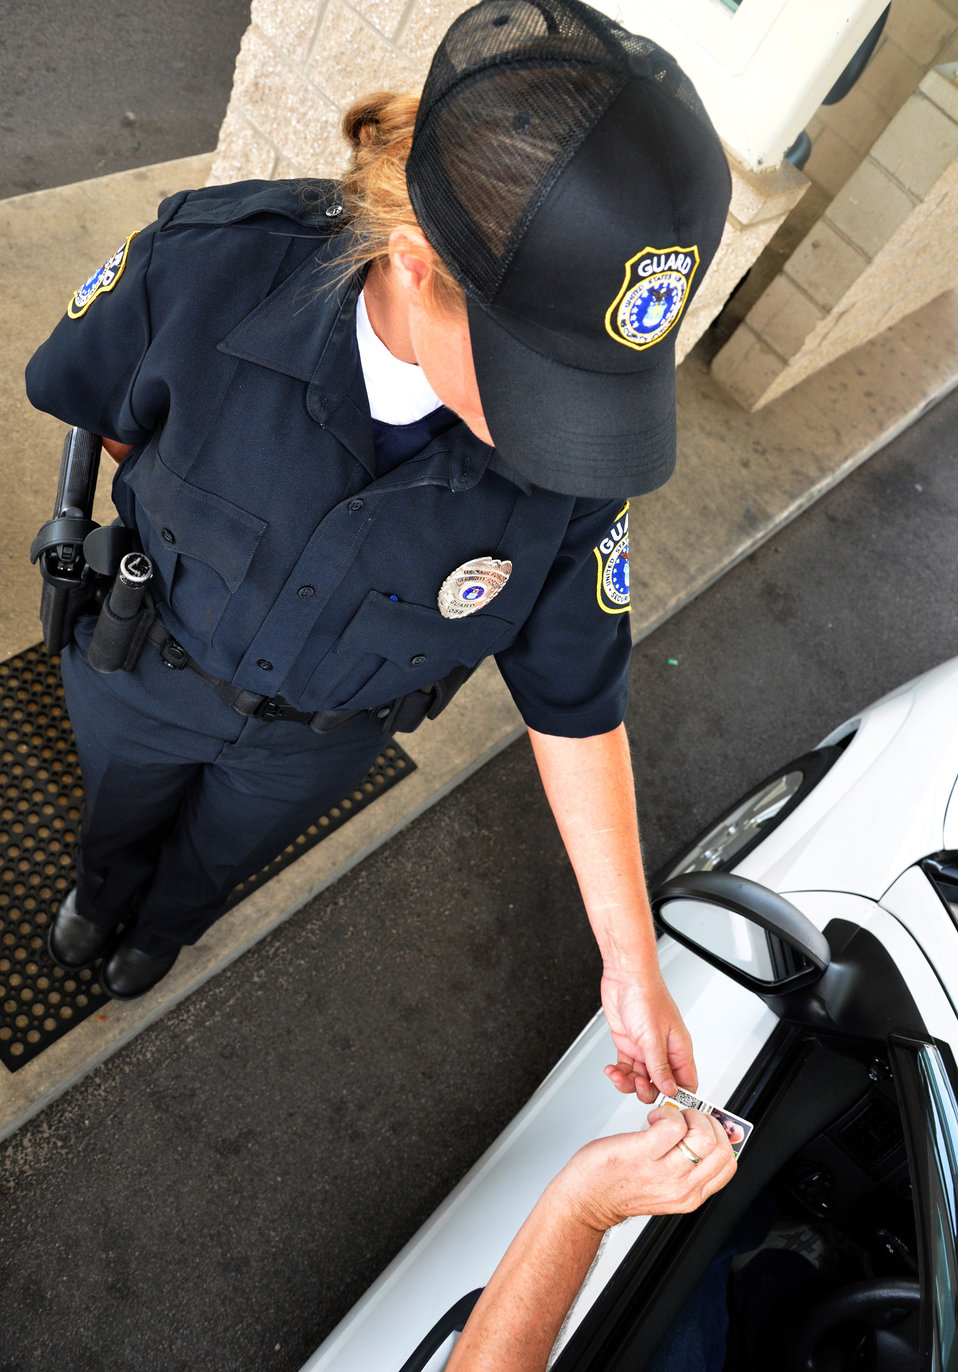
Eglin first to use new gate guards uniforms

Julia Cantrell checks a base commuter's ID before waving him on May 15 at Eglin Air Force Base, Fla. The newly hired Department of the Air Force Security Forces guards received new uniforms similar to the Los Angeles Police Department uniform as part of an Air Force-wide initiative. This initiative requires all civilian gate guards to have advanced training with weapons, rigorous evaluations of mental and physical fitness as well as at least one year of law enforcement experience. Ms. Cantrell is a Department of the Air Force Security Forces civilian guard.